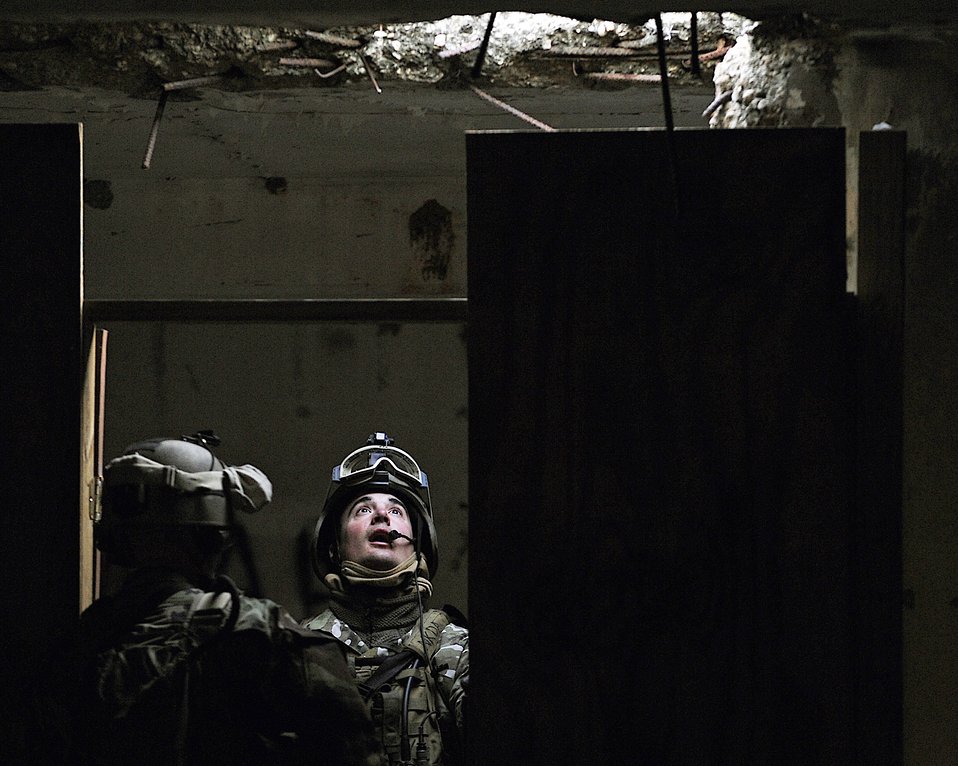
Wait for the signal

As he